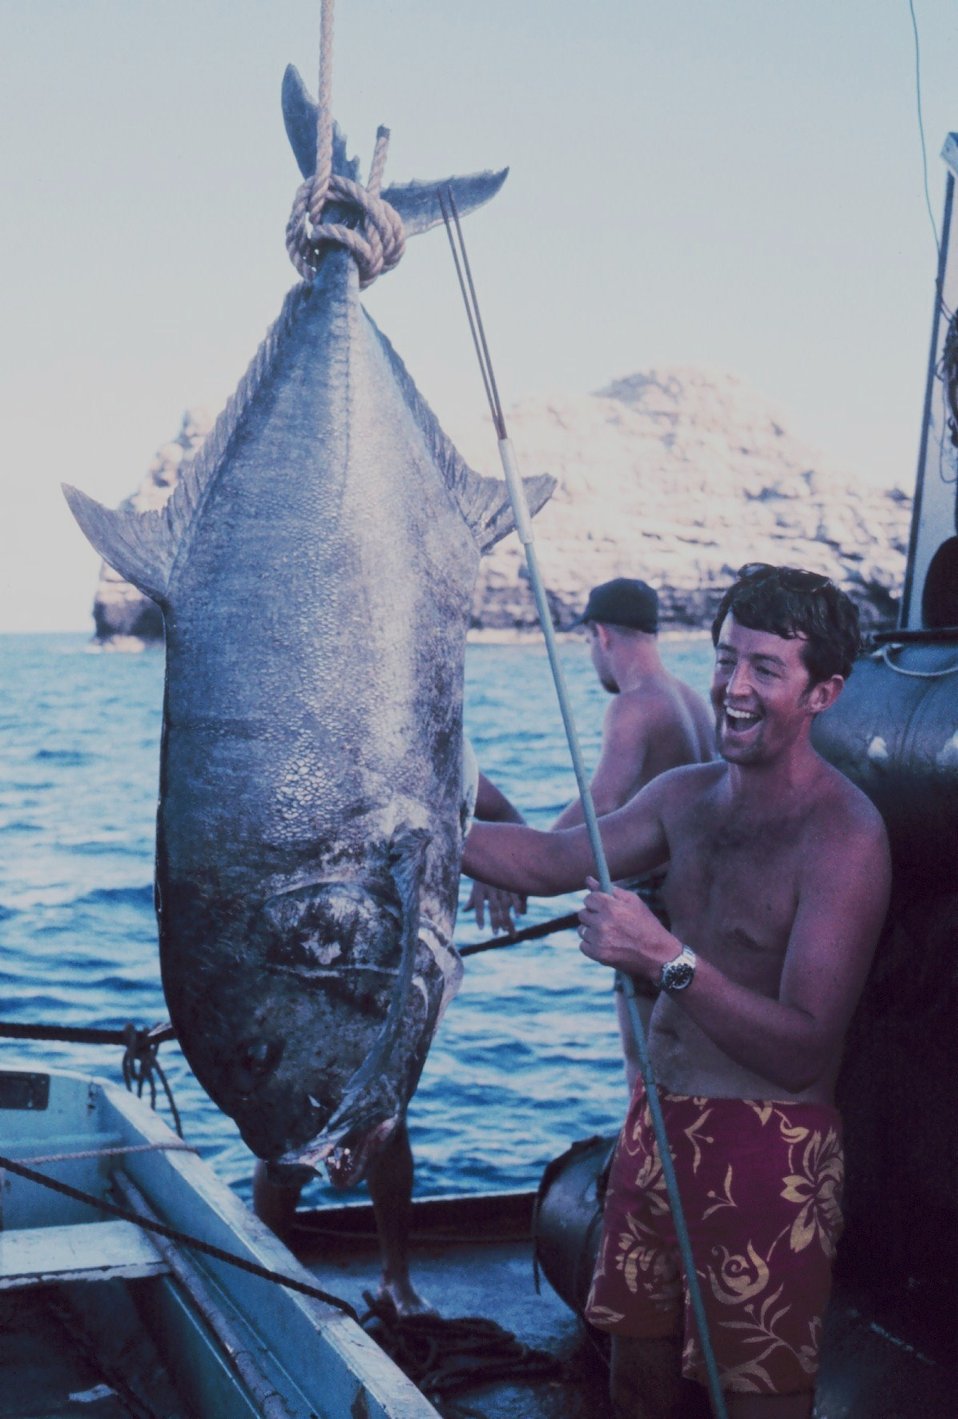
A giant trevally caught off Gardner Pinnacles near Tern Island